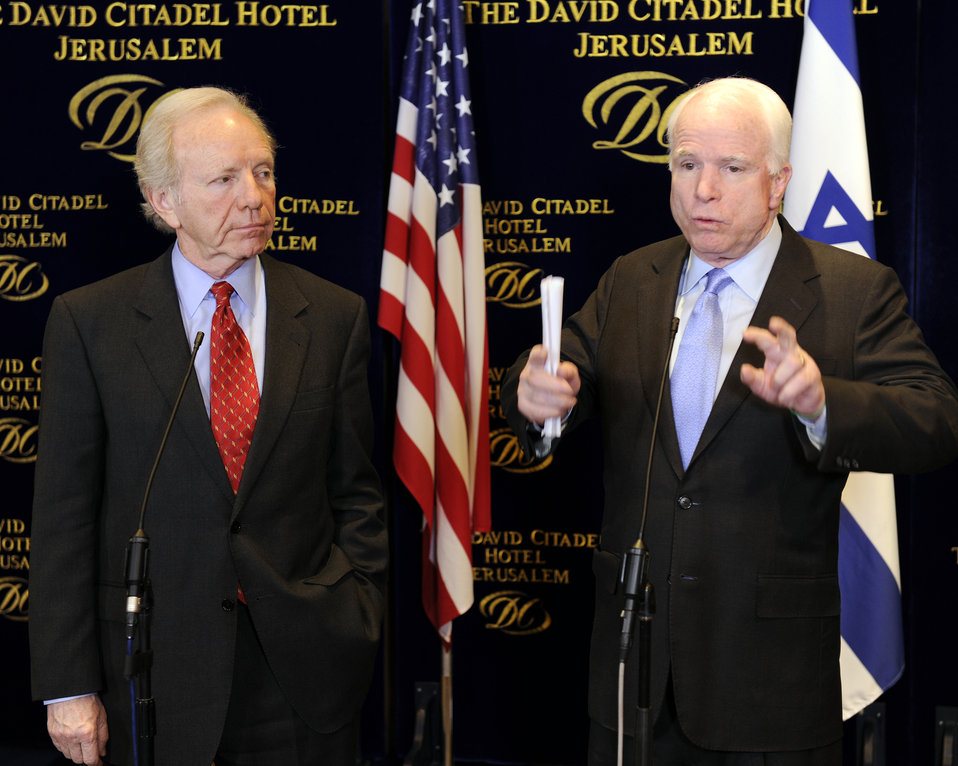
Senators McCain and Lieberman Hold a Press Conference

U.S. Senators John McCain (R-AZ), and Joseph Lieberman (I-CN), hold a press conference given in Jerusalem on February 25, 2011.